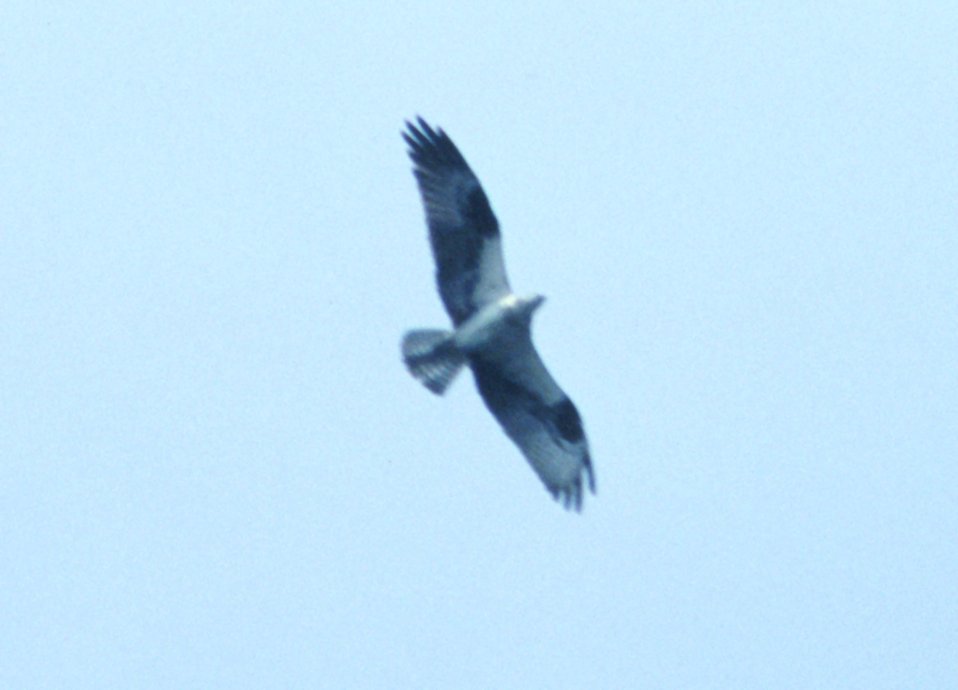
Osprey in flight.